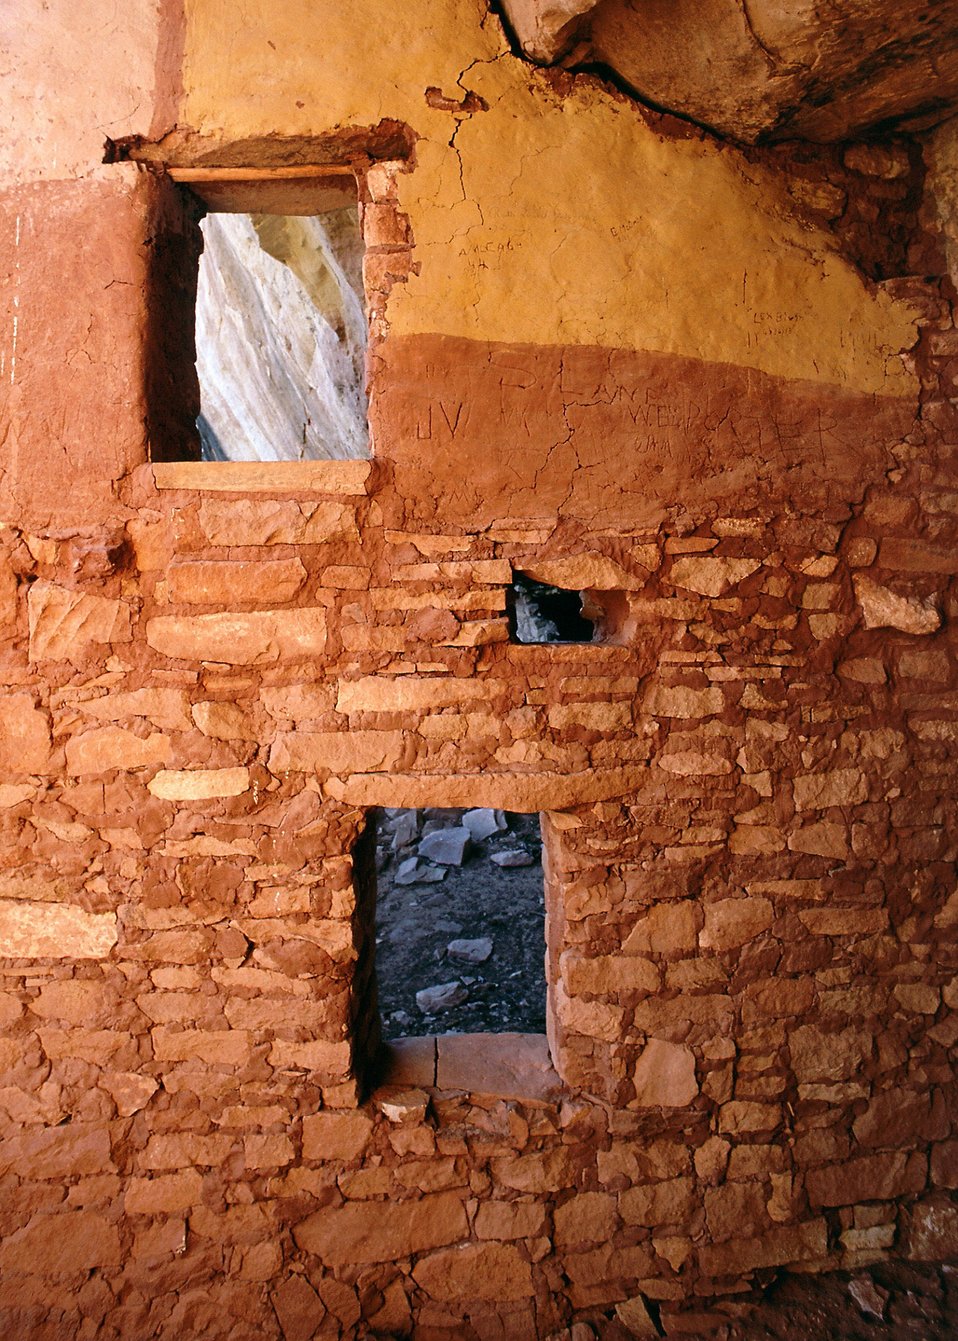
Brick wall with window at the center